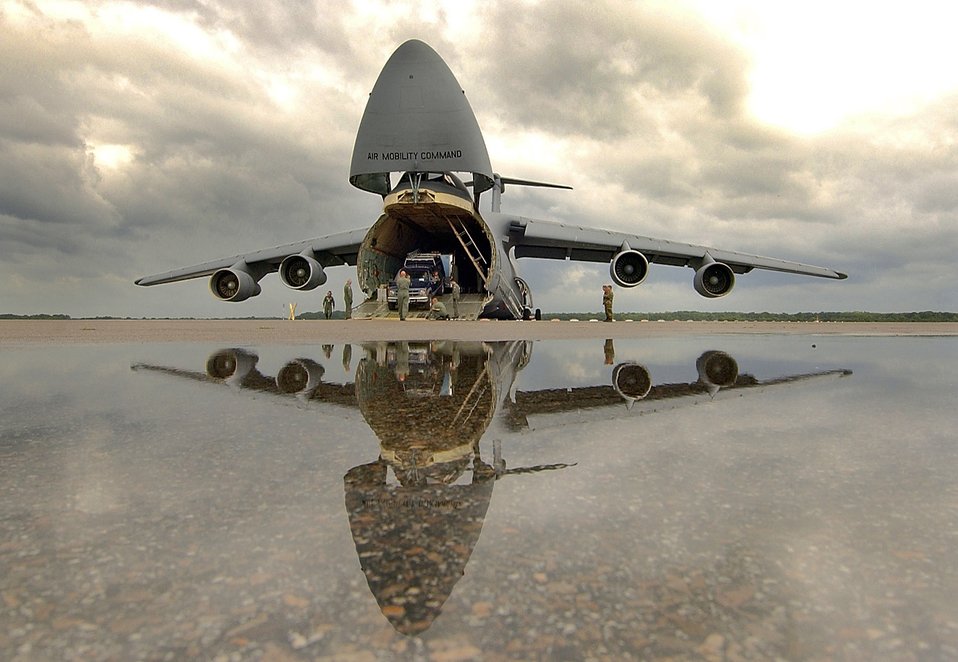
Galaxy reflection

BUSH FIELD, Ga. -- Airmen unload vehicles from a C-5 Galaxy here June 11. The Galaxy and its crew are providing transportation for cargo being used during Exercise Golden Medic 2005 which is being held simultaneously at three locations -- here, Fort Gordon, Ga., and Fort McCoy, Wis.